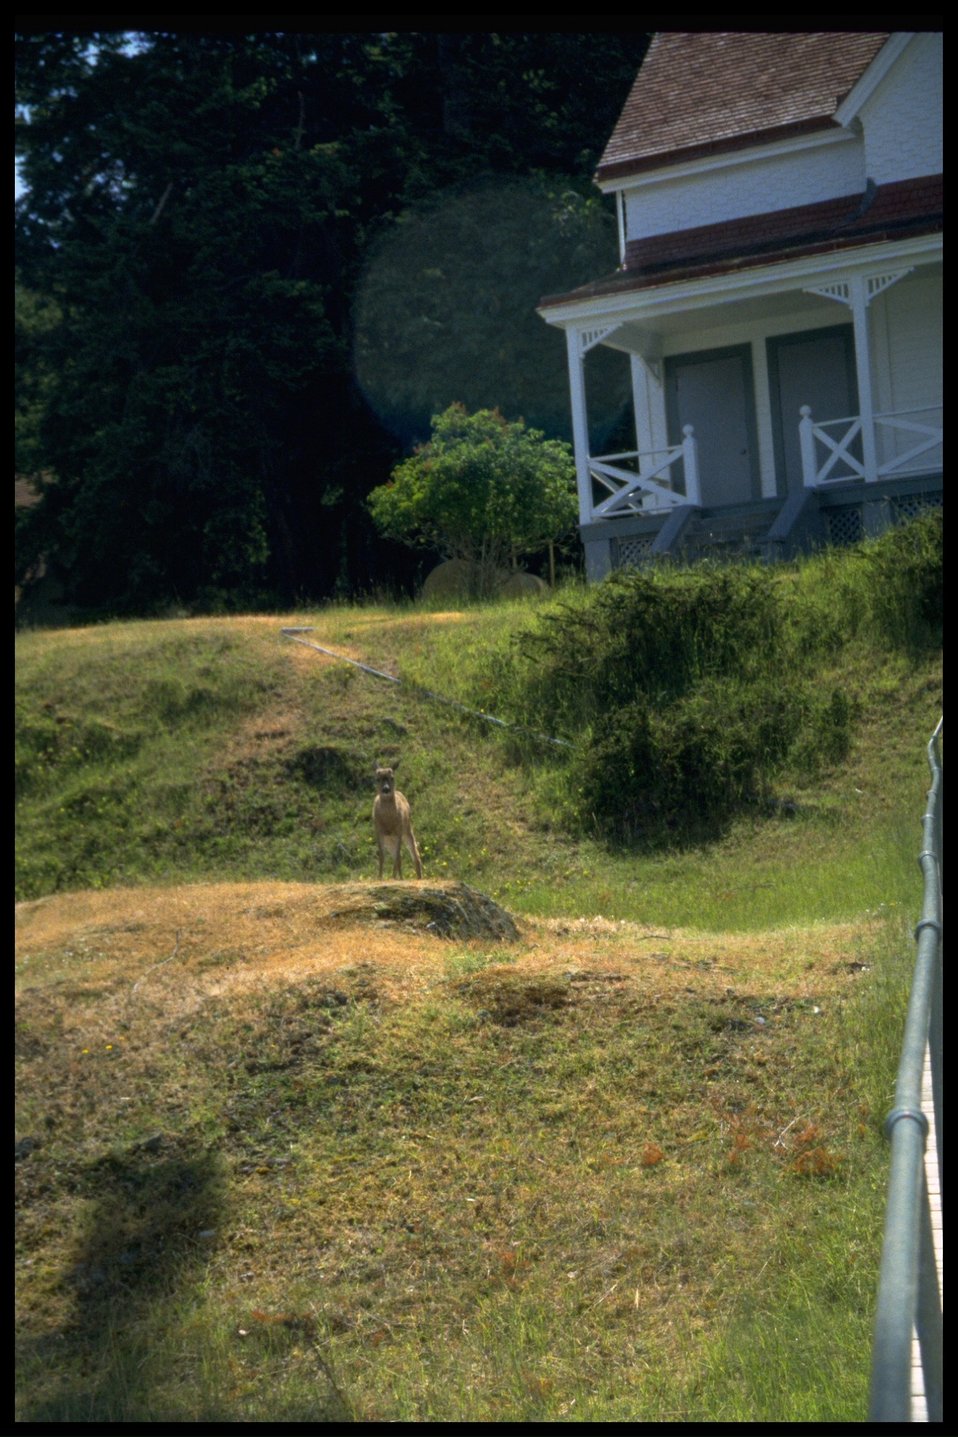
Deer on grounds in front of the living quarters at Turn Point.